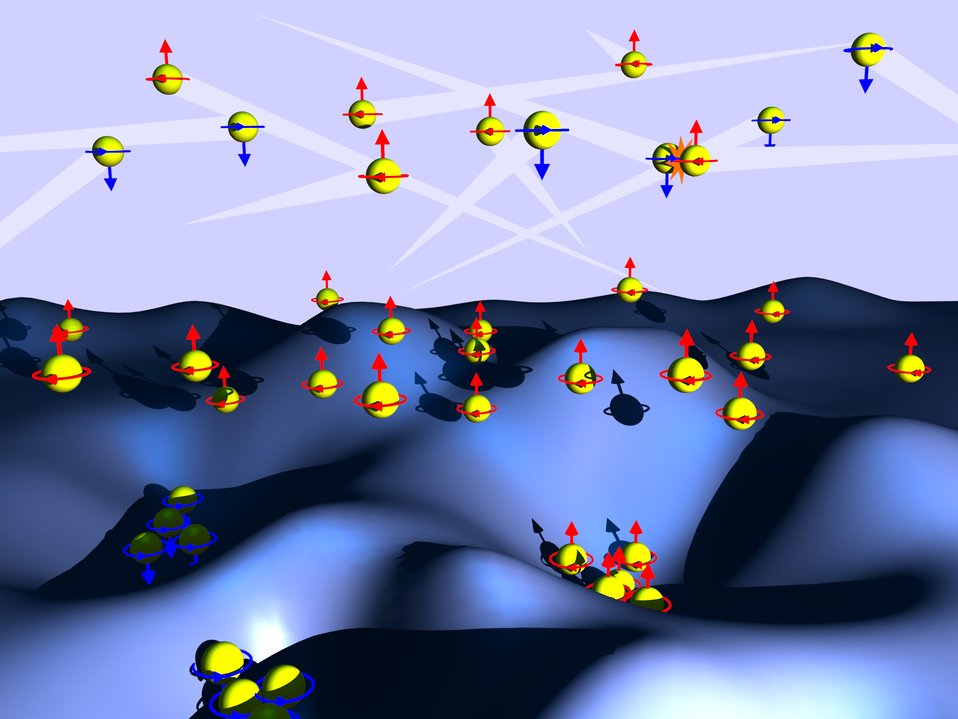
Spintronic Devices

JILA research shows that electrons tend to hold consistent 'spins' longer in low-energy, disordered areas of a semiconductor (representing by the valleys of the cartoon), while spinning more erratically in higher-energy areas of a perfect crystal where movement is more fluid (represented by the mountains and air).